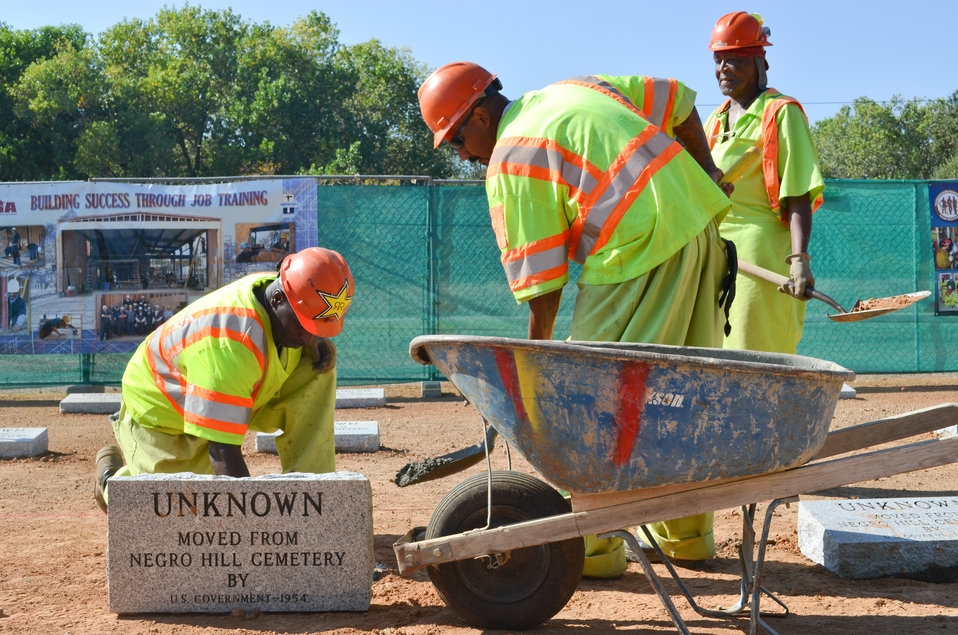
Replacing offensive grave markers at Mormon Island Relocation Cemetery

Folsom Prison inmates working under the California Prison Industry Authority place new grave markers at Mormon Island Relocation Cemetery in El Dorado Hills, Calif., Oct. 19, 2011, replacing original markers that contained an offensive racial epithet. The U.S. Army Corps of Engineers Sacramento District moved the 36 graves from the original Negro Hill Cemetery to the relocation cemetery during the construction of Folsom Dam in 1954, and created the offensive markers. El Dorado County, which manages the cemetery, and the California Prison Industry Authority collaborated on the project to replace the markers.